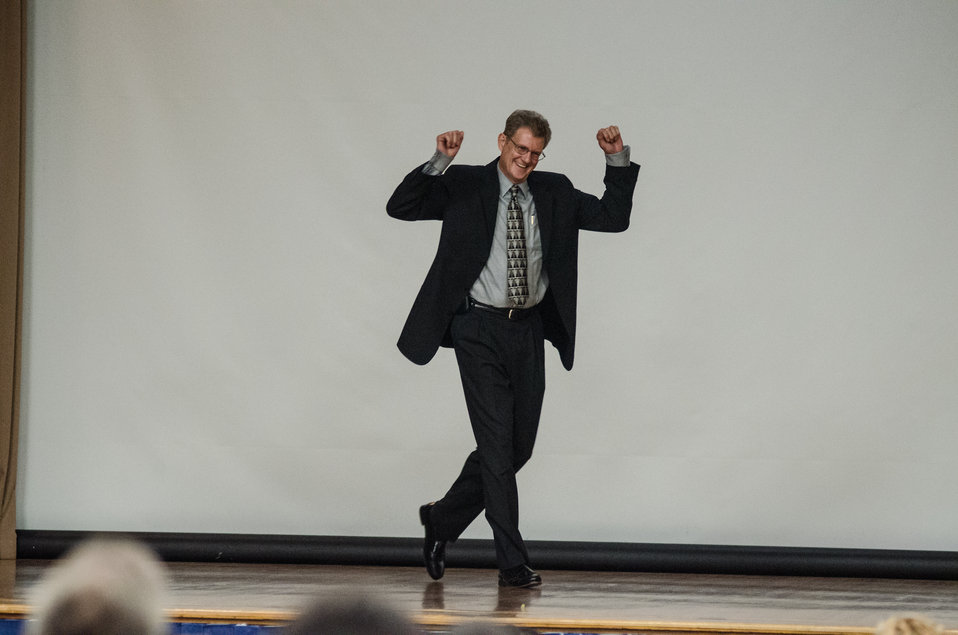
Senior leaders make a stage entrance to the theme of “Rocky” during the U.S. Department of Agriculture’s (USDA) Rural Development (RD) 2nd Annual Cultural Transformation kickoff opening ceremony and forums, themed “Employees Influencing Change,” on Tuesday, Aug. 13, 2013 at USDA in Washington, D.C.